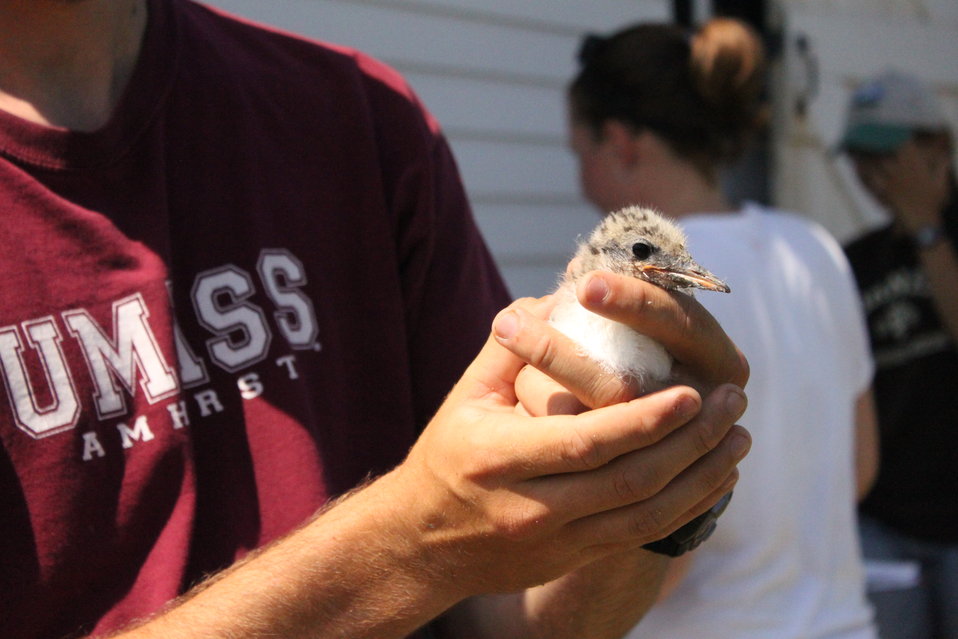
FWS Contractor UMass Student Holding Tern Chick